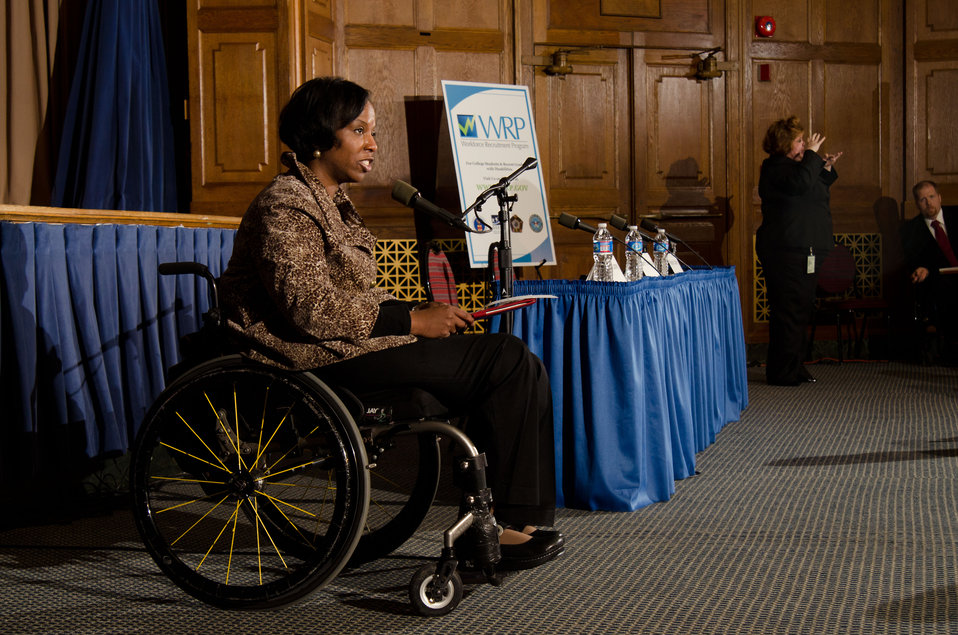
United States Department of Agriculture Special Assistant to the Secretary on Disability Employment Carmen Jones addresses the Work Force Recruitment Program’s (WRP) 'Your Key To Hiring Student Interns and Employees with Disabilities” event hosted by the United States Department of Agriculture (USDA) in the Jefferson Auditorium, Washington, D.C. on Tuesday, February 7, 2012.